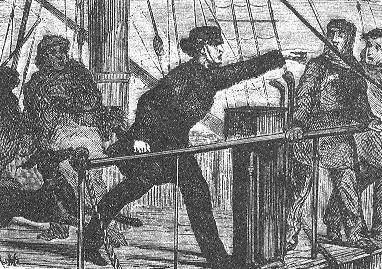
An illustration from Jules Verne's novel 'Journeys and Adventures of Captain Hatteras', part I: 'The English at the Noth Pole' drawn by Édouard Riou and/or Henri de Montaut. Polski: Ilustracja powieści Juliusza Verne'a 'Podróże i przygody kapitana Hatterasa', części I: 'Anglicy na Biegunie Północnym' autorstwa Édouarda Riou i/lub Henri de Montauta. Français : Jules Verne: 'Voyages et aventures du capitaine Hatteras - Les Anglais au Pôle Nord', Édouard Riou et Henri de Montaut.